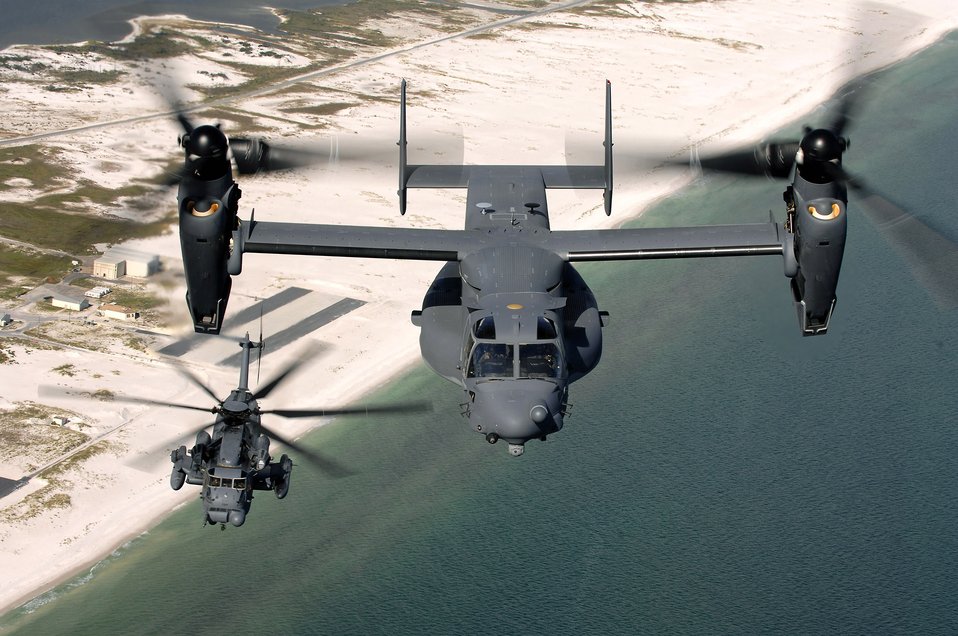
Stepping up

A CV-22 Osprey and an MH-53 Pave Low fly over the coastline Aug. 20 near Hurlburt Field, Fla. The CV-22 took over Air Force Special Operations Command helicopter missions when the MH-53 retired in October.